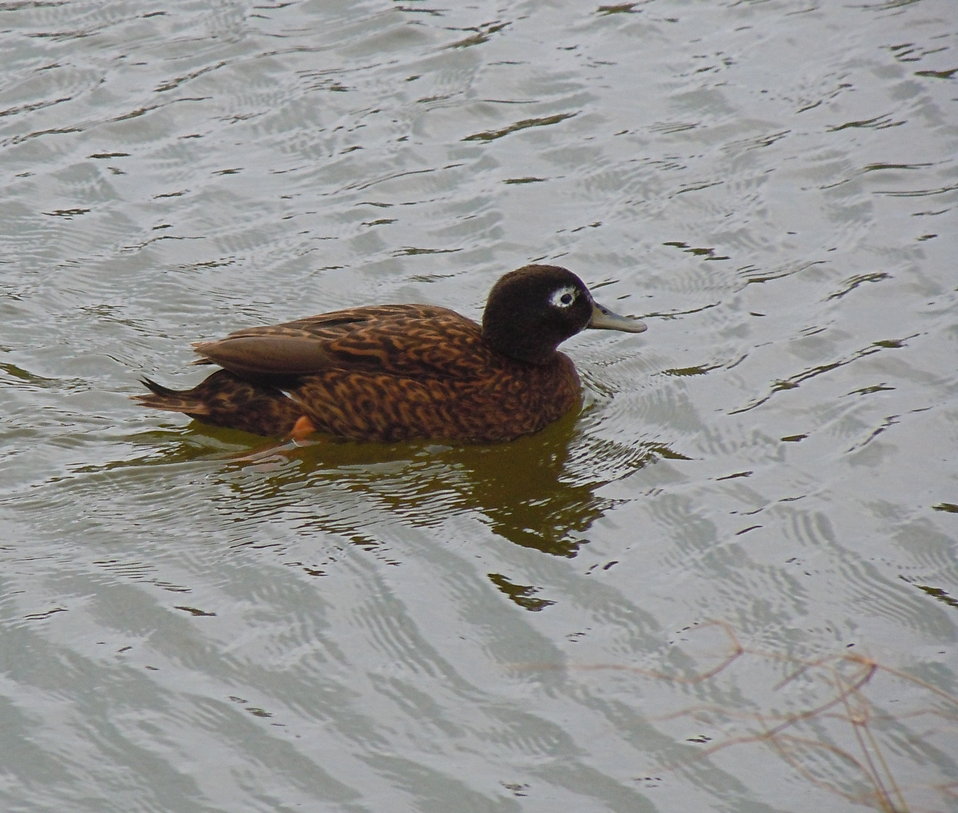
Laysan teal

This endangered species is also known as the Laysan duck. Midway Atoll National Wildlife Refuge
March 2012